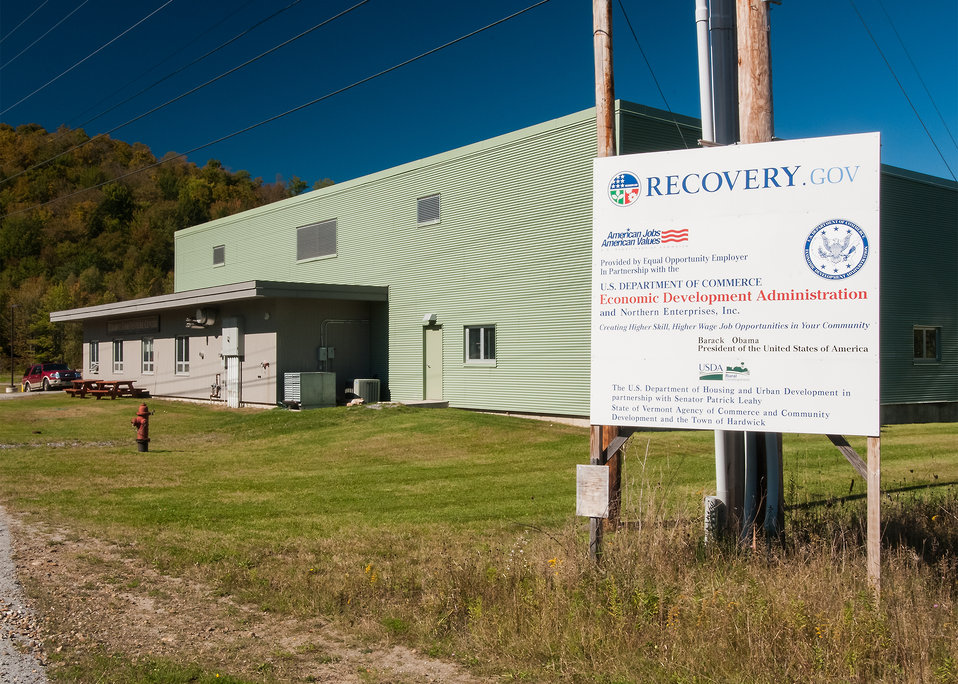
The Vermont Food Venture Center, a non-profit multi-purpose incubator kitchen and food processing facility operated by the Center for an Agricultural Economy in Hardwick, VT received assistance through a U.S. Department of Agriculture (USDA) Rural Development (RD) Rural Business Enterprise Grant (RBEG). The grant offers farmers in a region of rural America that celebrates food, farm and local economy the tools necessary to convert crops to value added business to start or expand their food-based business with the potential to create jobs and increase economic opportunity on Sep. 19, 2013.